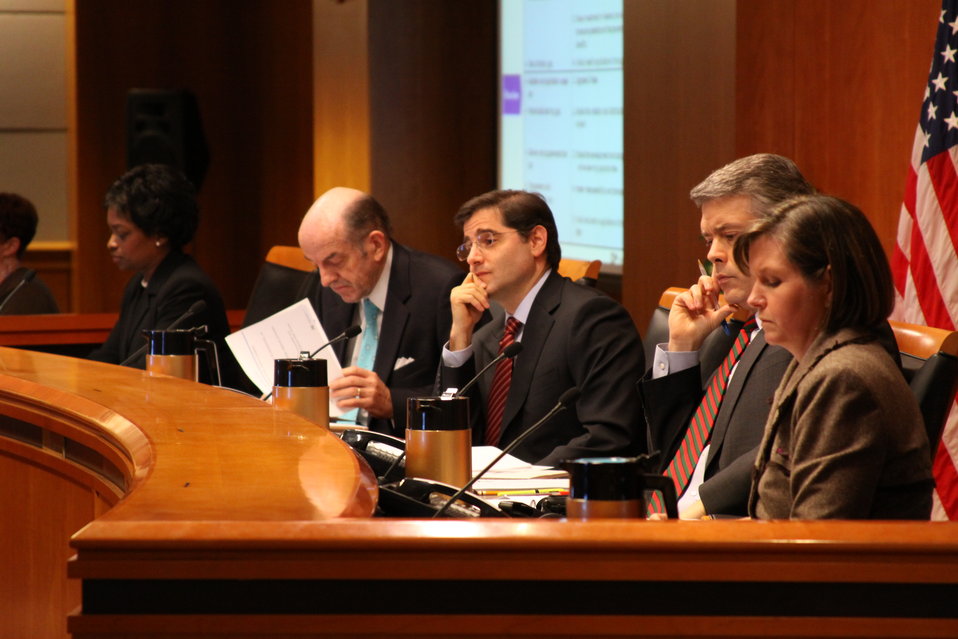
December Commission Meeting